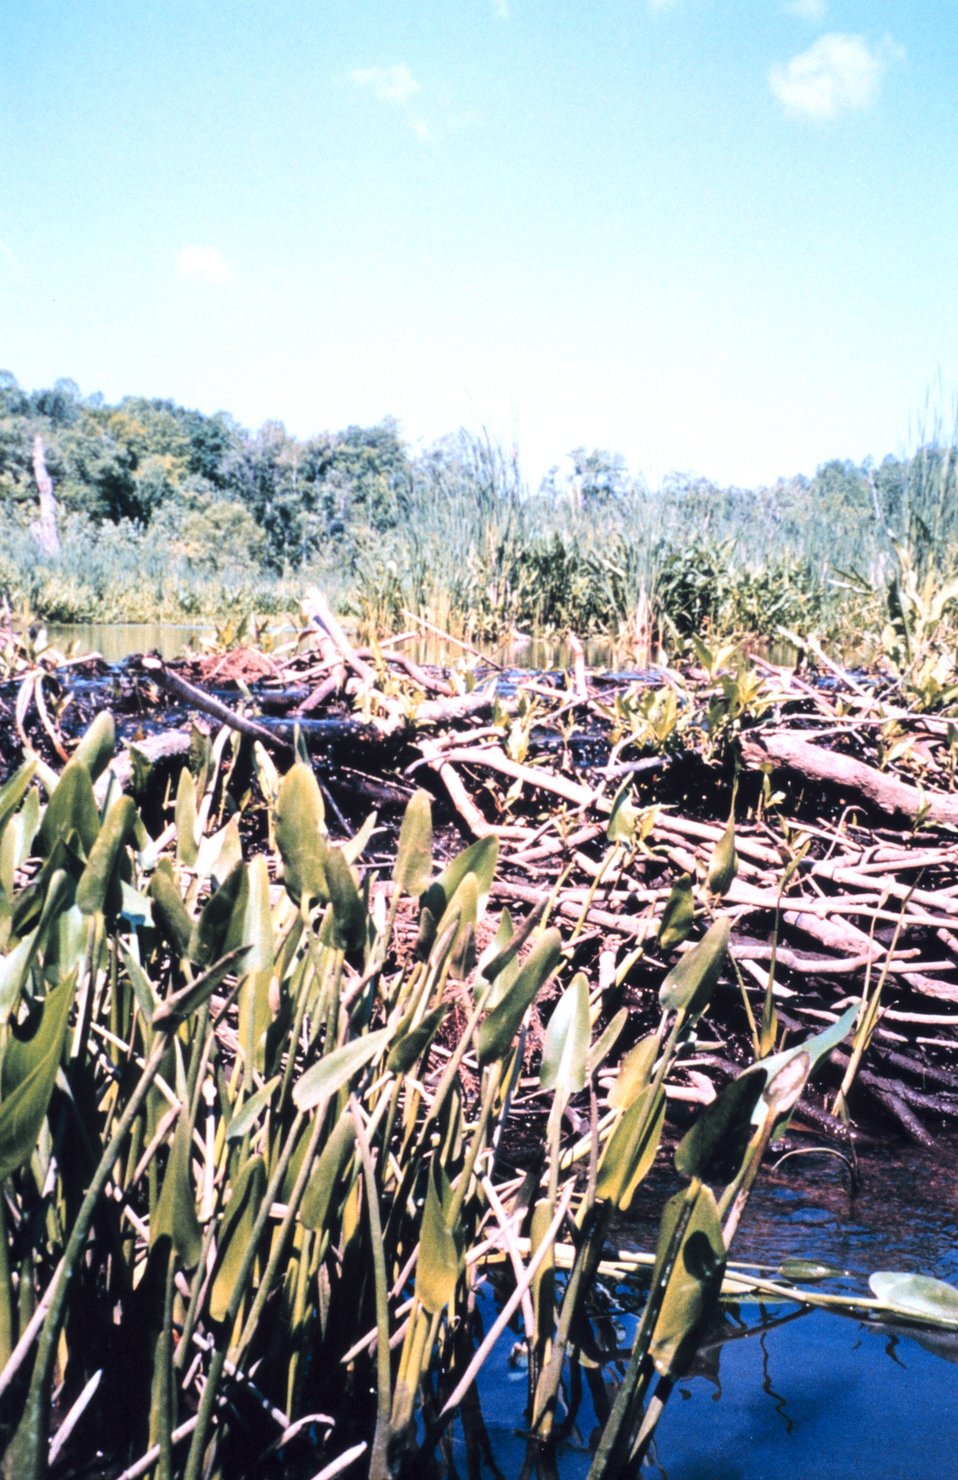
Pickerel weed growing in front of beaver dam at the head of Black Swamp Creek.